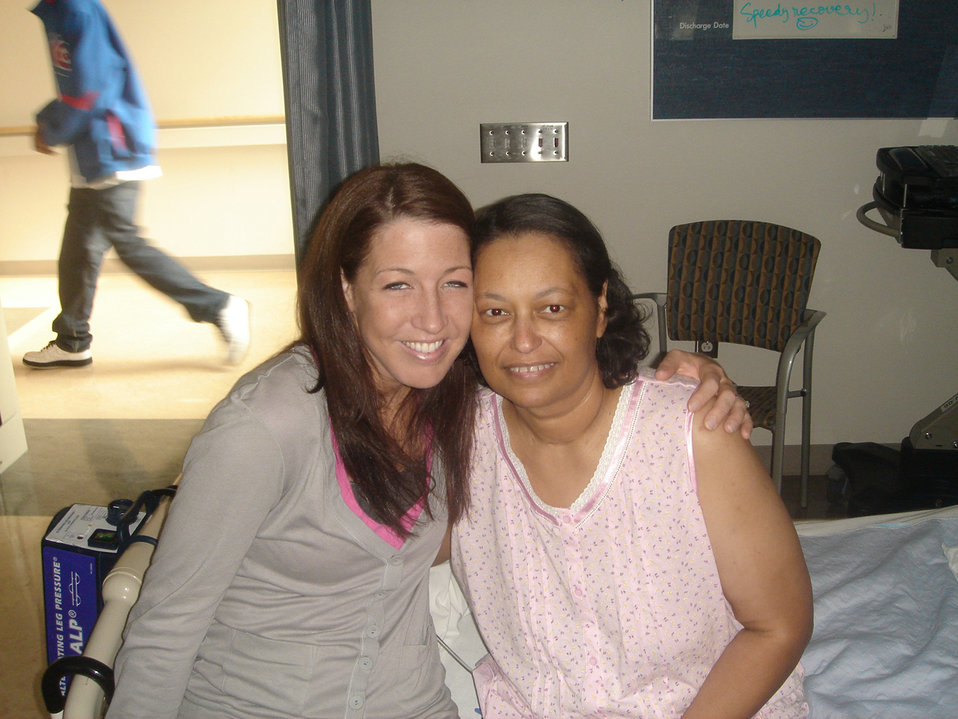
Kidney transplant

Master Sgt. Nicole Lanstrum (left), an intelligence analyst with the 612th Air Operations Center at Davis-Monthan Air Force Base, Ariz., gives Valinda Jones a hug after a successful kidney transplant between the two. Sergeant Lanstrum donated a kidney to Ms. Jones as part of a donor transplant chain.